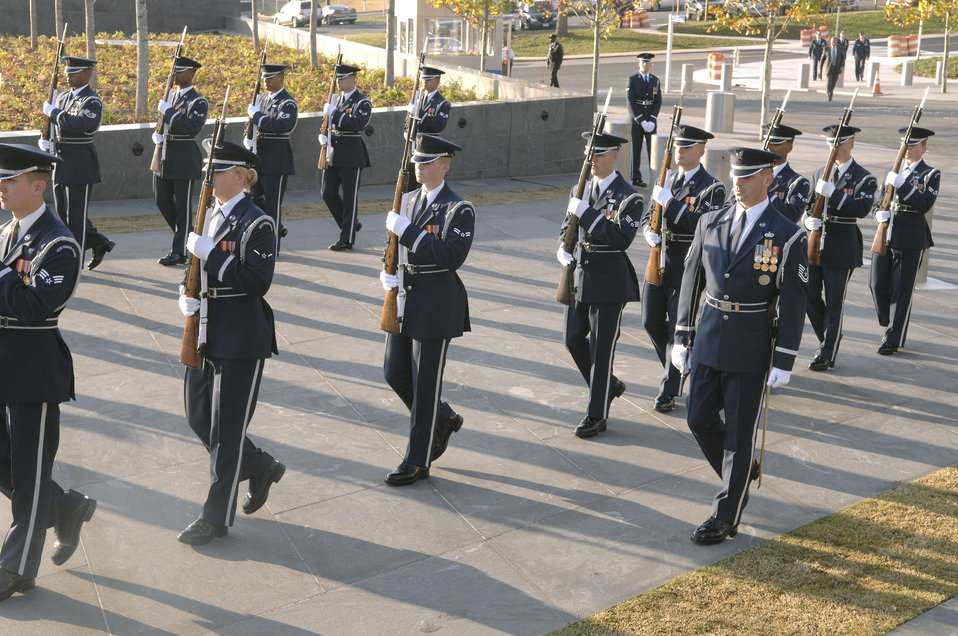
Air Force Honor Guard

United States Air Force Honor Guard members from Bolling Air Force Base, move into place during a memorial ceremony Nov. 10 in Arlington, Va.